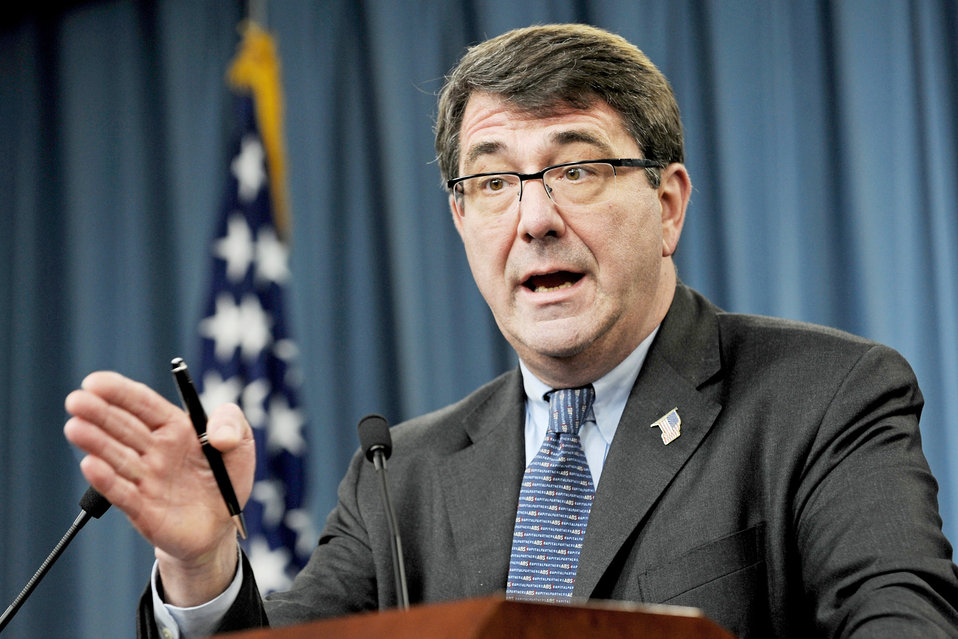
Official announces plans to curb fighter program's cost

Dr. Ashton B. Carter, undersecretary of defense for acquisition, technology and logistics, holds a Pentagon press conference, March 12, 2010, to talk about the acquisition reforms being instituted to keep the Joint Strike Fighter program on track and affordable.